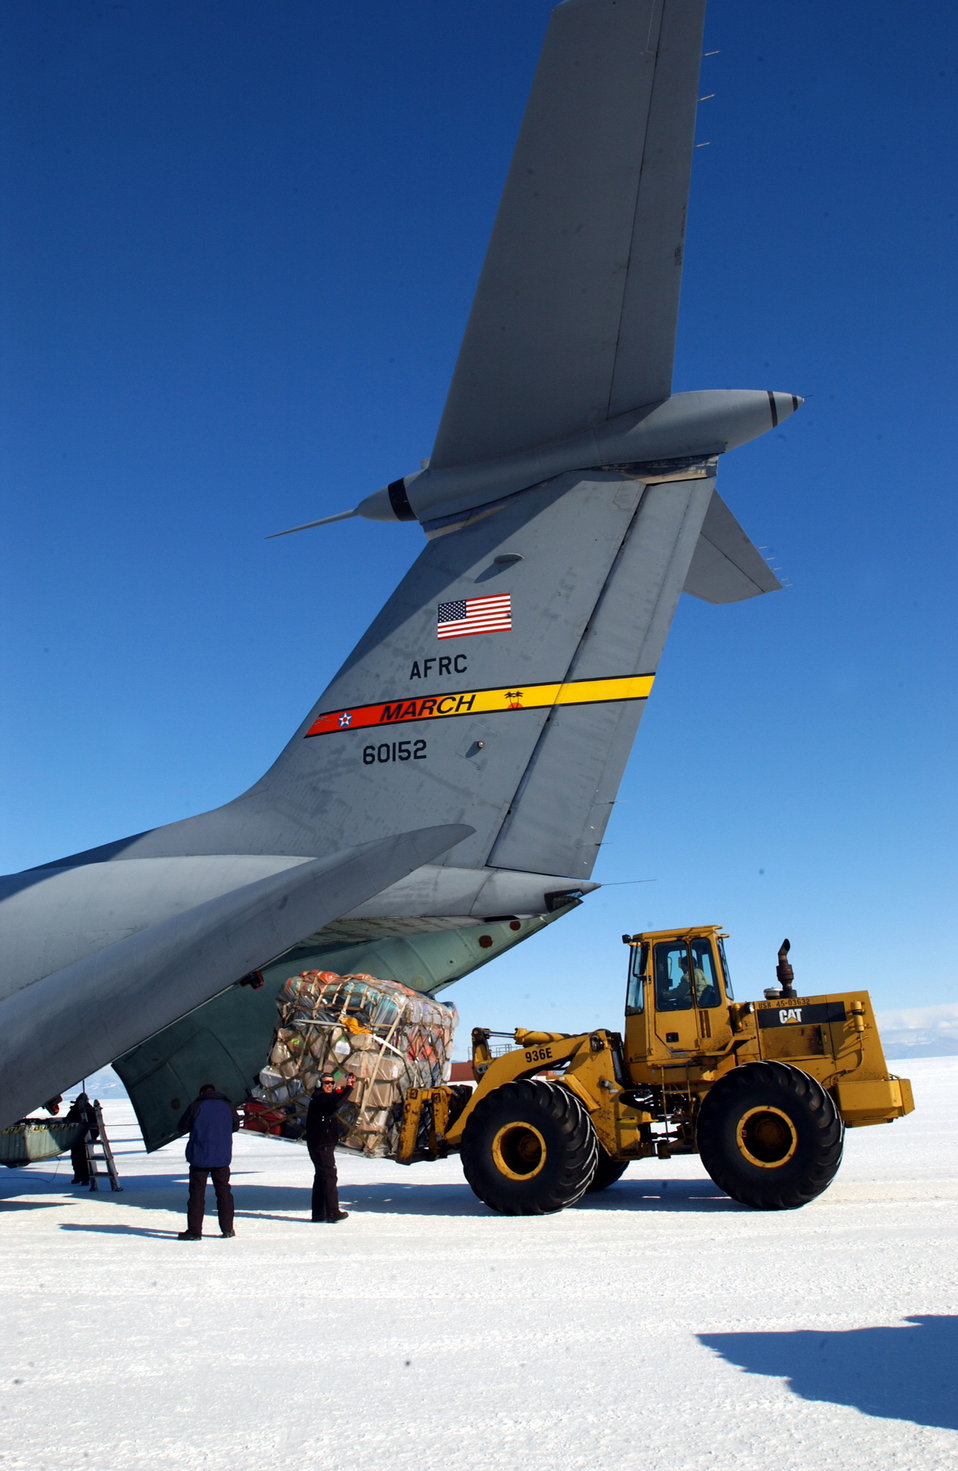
Frigid chapter closes of C-141

MCMURDO STATION, Antarctica -- Cargo is unloaded from a C-141 Starlifter from March Air Reserve Base, Calif., on the ice runway near here. The crews and aircraft were flying the last Air Force Reserve mission to Antarctica supporting Operation Deep Freeze.